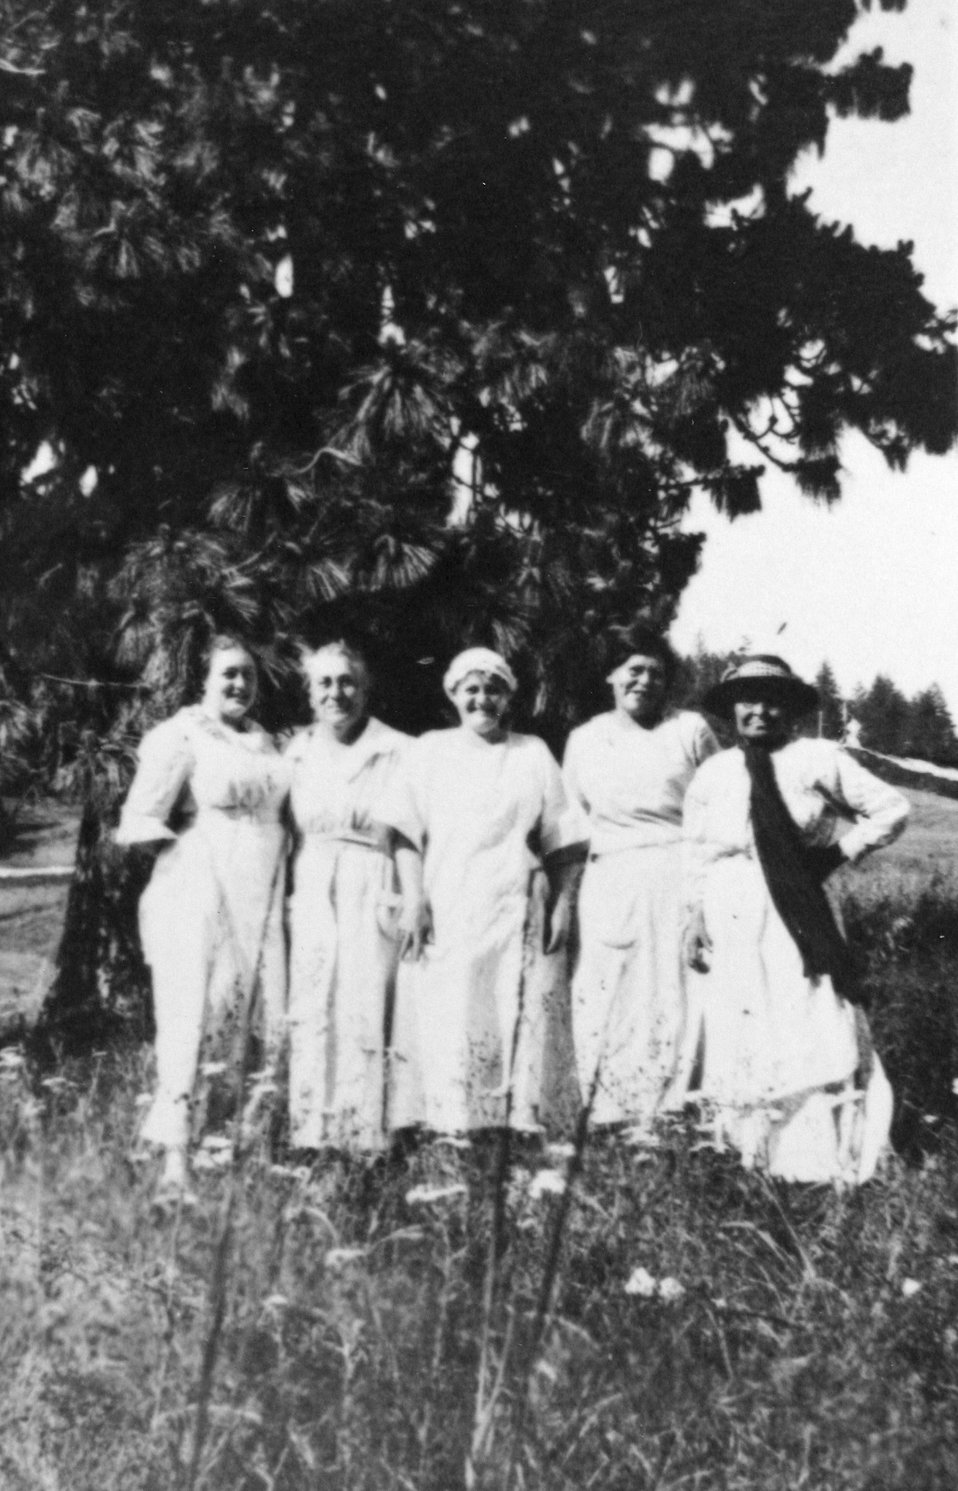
Adeline Billings far right and Viola Billings 2nd from right.